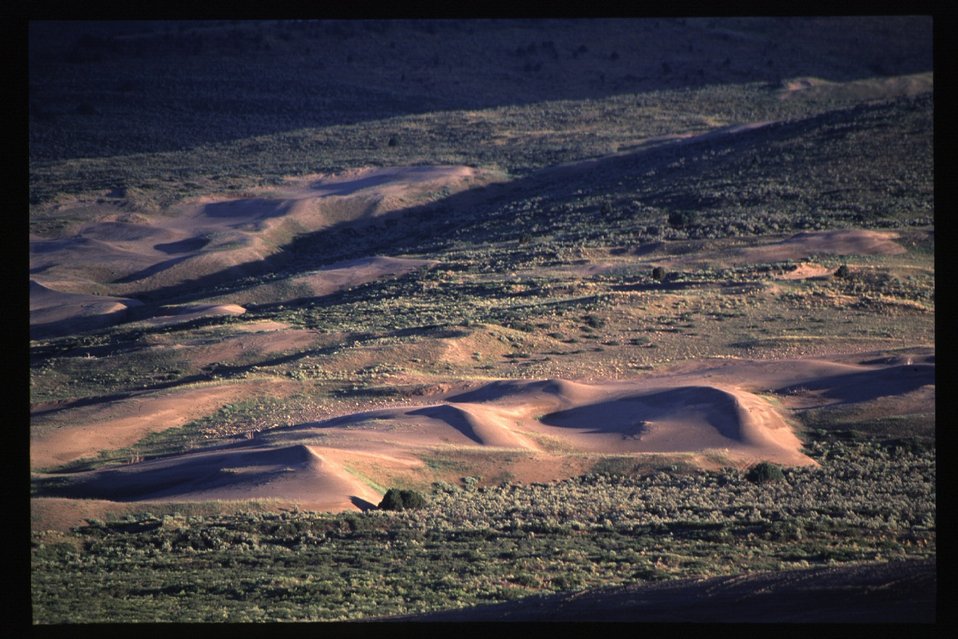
Recreation St Anthony Sand Dunes Overview Idaho Falls Field Office USRD Upper Snake River District